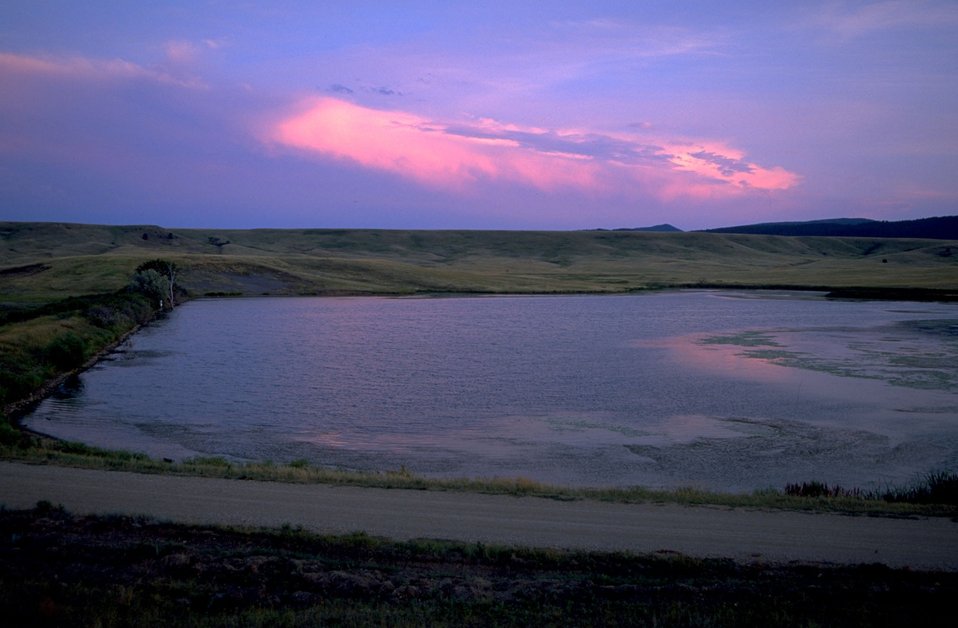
Fort Meade Reservoir, nothern Fort Meade, SD